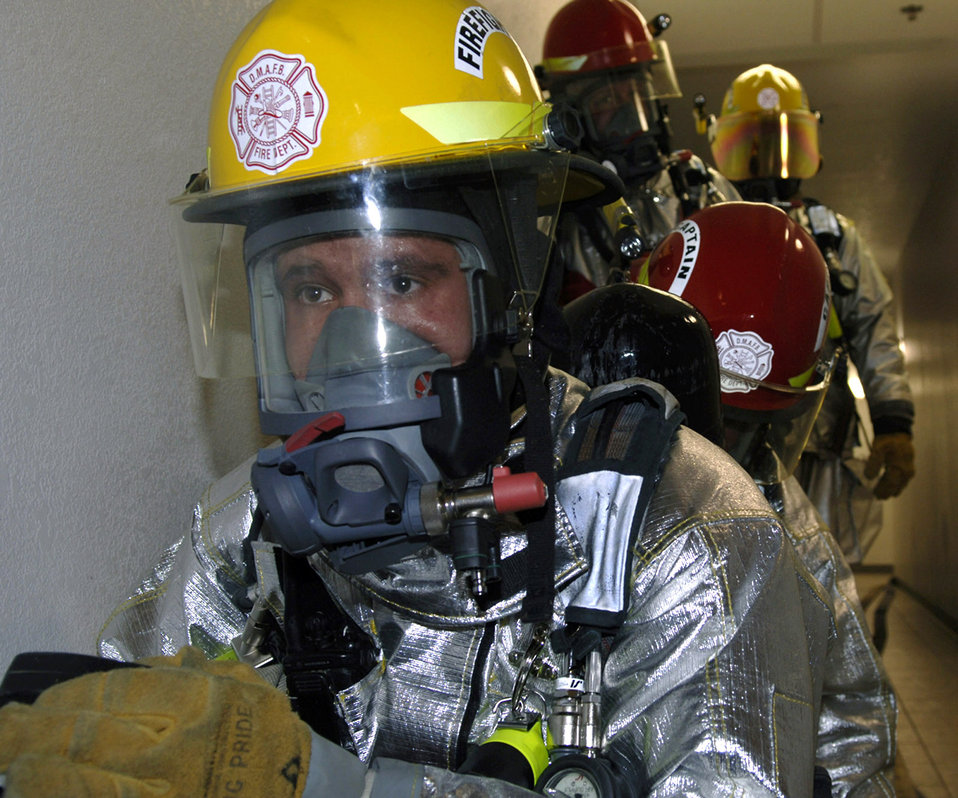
Rescue and readiness

Senior Airman Michael Lewis, Airman 1st Class Robert Whitaker and Tech. Sgt. Steven Nordlund prepare to search for personnel left inside a building during a simulated fire and evacuation at Davis-Monthan Air Force Base, Ariz., in preparation for an operational readiness inspection. The three Airmen are firefighters assigned to the 355th Civil Engineer Squadron.